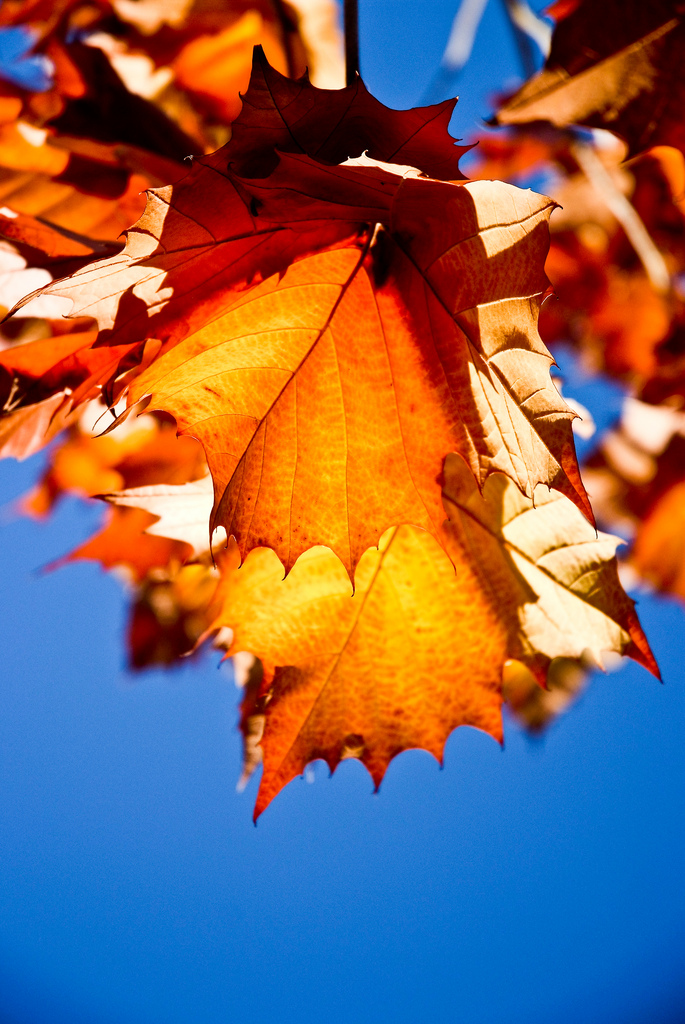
sycamore leaves

Sacramento River National Wildlife Refuge, CA
Photo: Justine Belson, USFWS
Nov. 2010
Sycamore Tree Phelan Is. Unit SRNWR